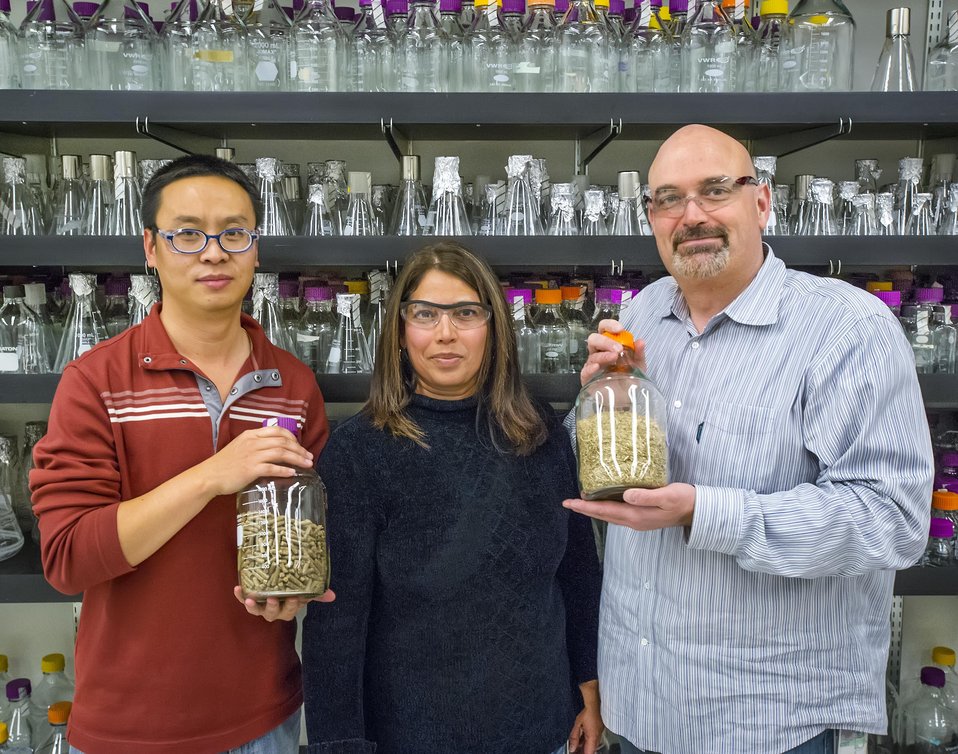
The Joint Bioenergy Institute Research on the successful use of ionic liquids to pre-treat mixed blends of different biofuel feedstocks.

The new center led by Lawrence Berkeley National Laboratory, University of California campuses in Berkeley and Davis, and Stanford University. Research at the DOE JBEI will focus on biofuels-liquids derived from the solar energy stored in plant biomass. Harnessing even a light fraction of the total solar energy available each year could meet most if not all of the nation's annual transportation energy needs. The other two DOE bio-energy research centers are the DOE great lakes bioenergy research center led by University of Wisconsin in Madison, Wisconsin in close collaboration with Michigan State University in East Lansing, Michigan.